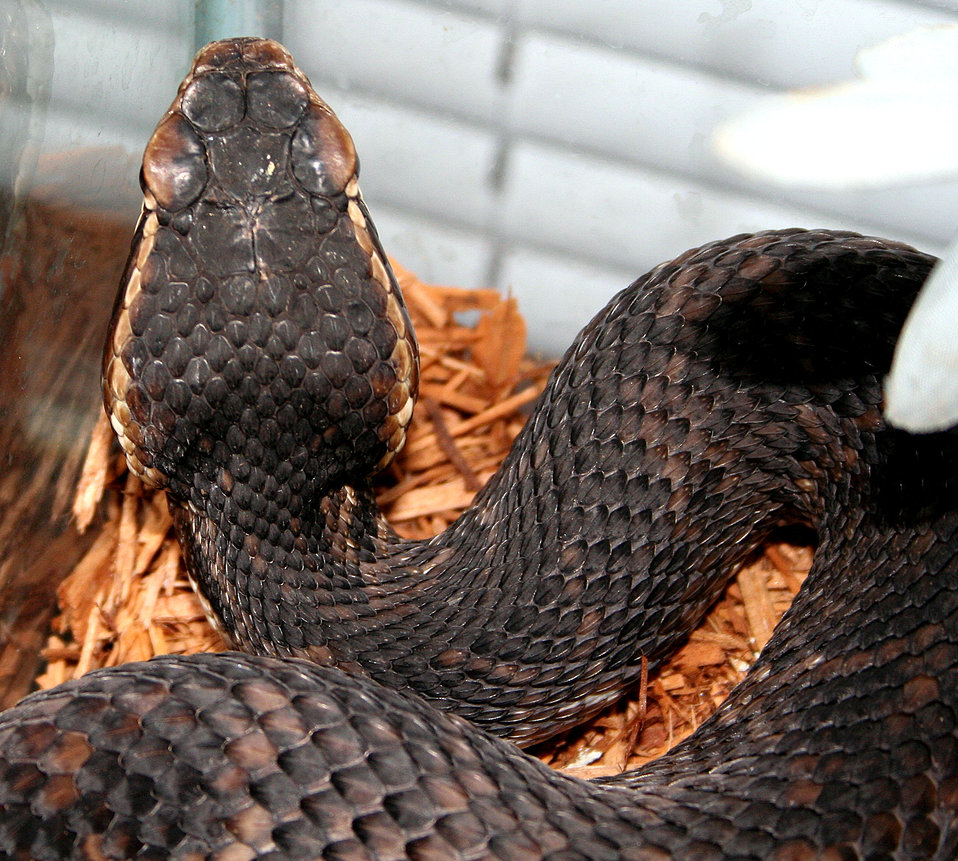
A Florida cottonmouth snake

This 2005 photograph depicted an 'Florida cottonmouth' snake, Agkistrodon p. conanti. The cottonmouth is a large dark heavy-bodied snake that ranges throughout a large portion the southeastern United States. Cottonmouths are the largest snakes in the New World Agkistrodon species complex and are the only members of the group that are semiaquatic. Three distinct subspecies are currently recognized; the 'eastern', 'Florida', and 'western' cottonmouths. The Florida cottonmouth ranges from the southeastern extreme of South Carolina through coastal and southern Georgia, south throughout the state of Florida and west along the Gulf Coast to the eastern face of Mobile Bay in Alabama.